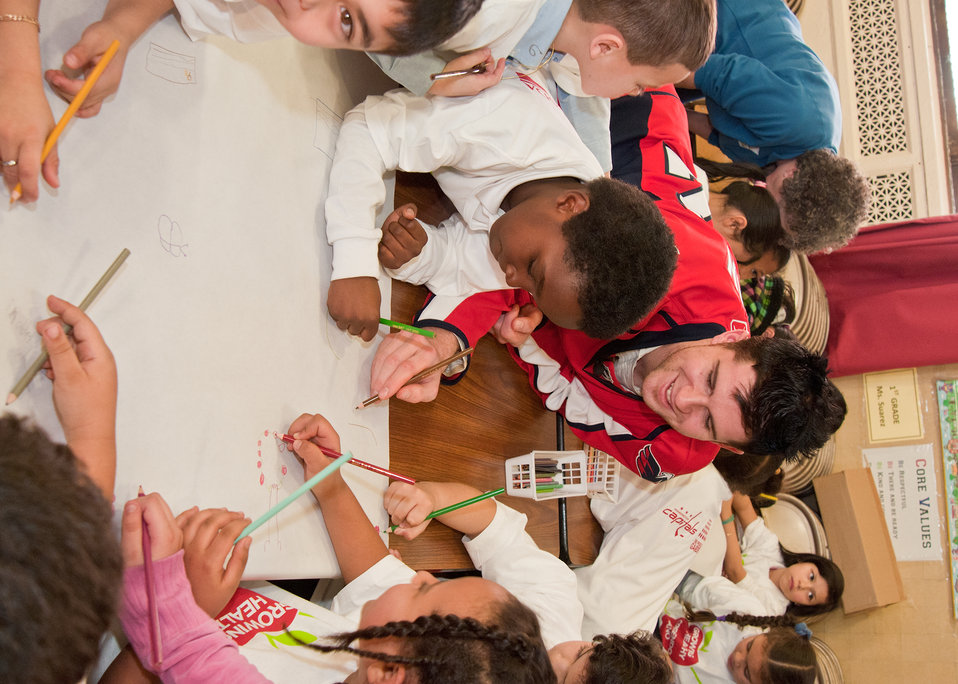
Mike Green, Washington Capitals and 2011 NHL All-Star defenseman (center) and Luis Hernandez Reyes and students in Jennifer Dillard and Jill Nicolas’s second grade class at Powell Elementary School in Washington, D.C., work on a garden plan during a People’s Garden Workshop with Comcast SportsNet Analyst Alan May, teachers and parents Thursday, February 10, 2011. The design process was led by United States Department of Agriculture employees.The Washington Capitals adopted Powell Elementary as part of the team’s community outreach efforts. The Caps held a floor hockey clinic at the school to promote the sport along with exercise and healthy lifestyles. Green, who is on a waiting list to get a plot in an Arlington community garden, was very excited to help the school create a garden. Gardening runs in Mike’s blood he grew up on a farm in Canada.